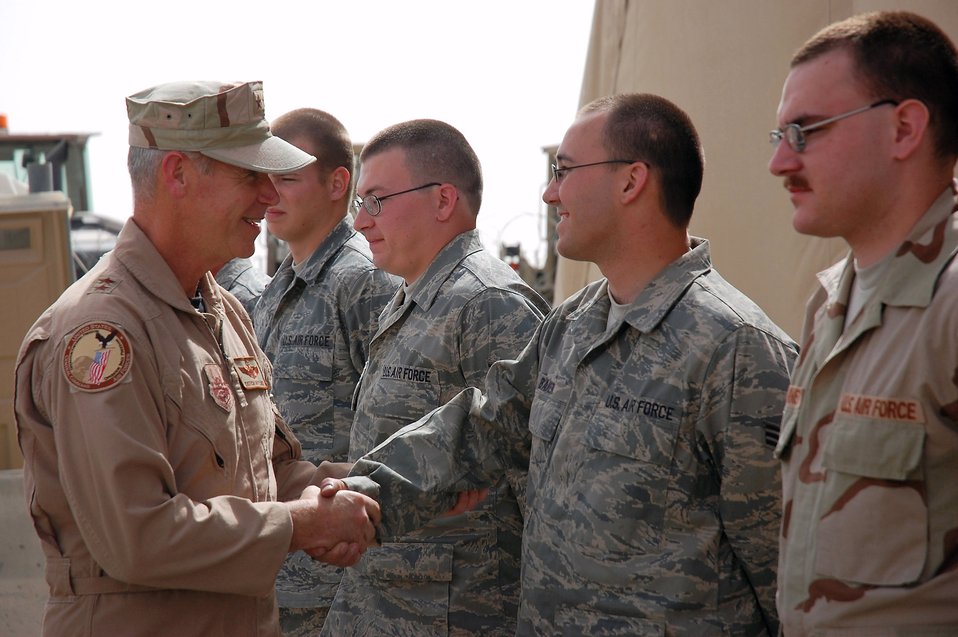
AFCENT deputy commander visits deployed Airmen

Maj. Gen. William L. Holland shakes hands with Senior Airman Andrew Baker April 2 at a Southwest Asian air base. General Holland is the 9th Air Force vice commander and the deputy commander of U.S. Air Forces Central from Shaw Air Force Base, S.C. He visited the area of responsibility to thank the Airmen for what they do and to take back any inputs on how to better train and equip the Airmen supporting operations Iraqi Freedom and Enduring Freedom. Airman Baker is a member of the 386th Expeditionary Logistics Readiness Squadron deployed from Dover Air Force Base, Del.